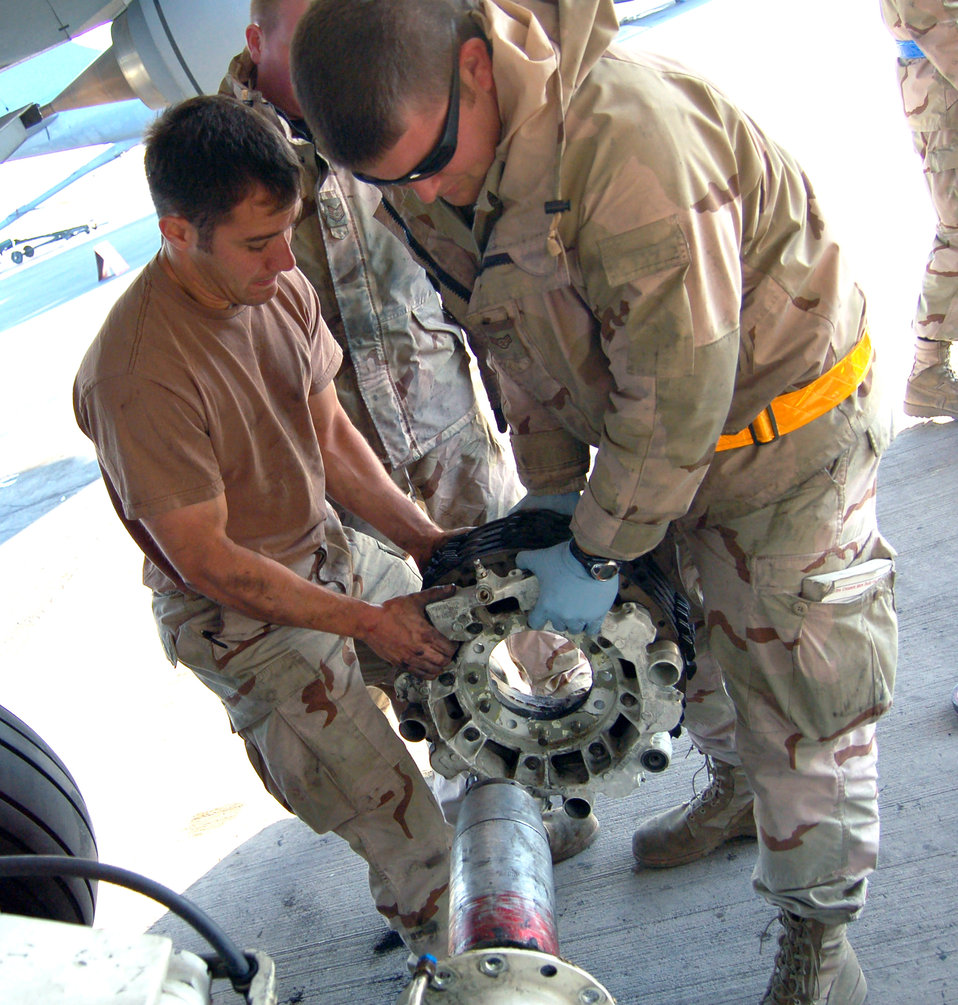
Maintenance unit moves fuel on time

Staff Sgt. Carl Graves-Klaric (left) and Airman 1st Class Neal Sicard change the brake on the No. 1 wheel of a KC-135 Stratotanker.